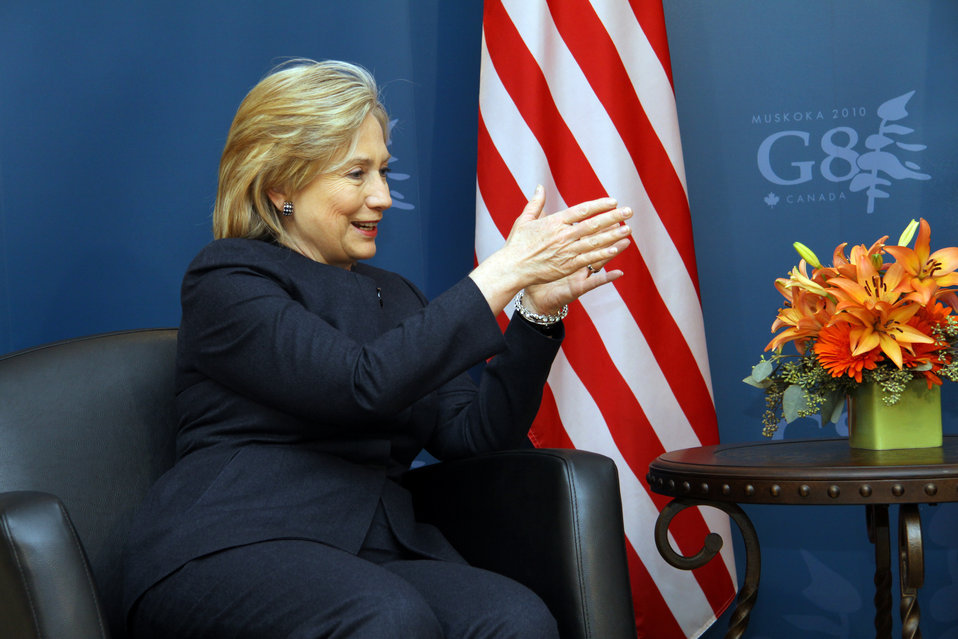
Secretary Clinton Meets With Canadian Prime Minister

U.S. Secretary of State Hillary Rodham Clinton during the G8 Foreign Ministers Meeting in Ottawa, Canada March 29, 2010.